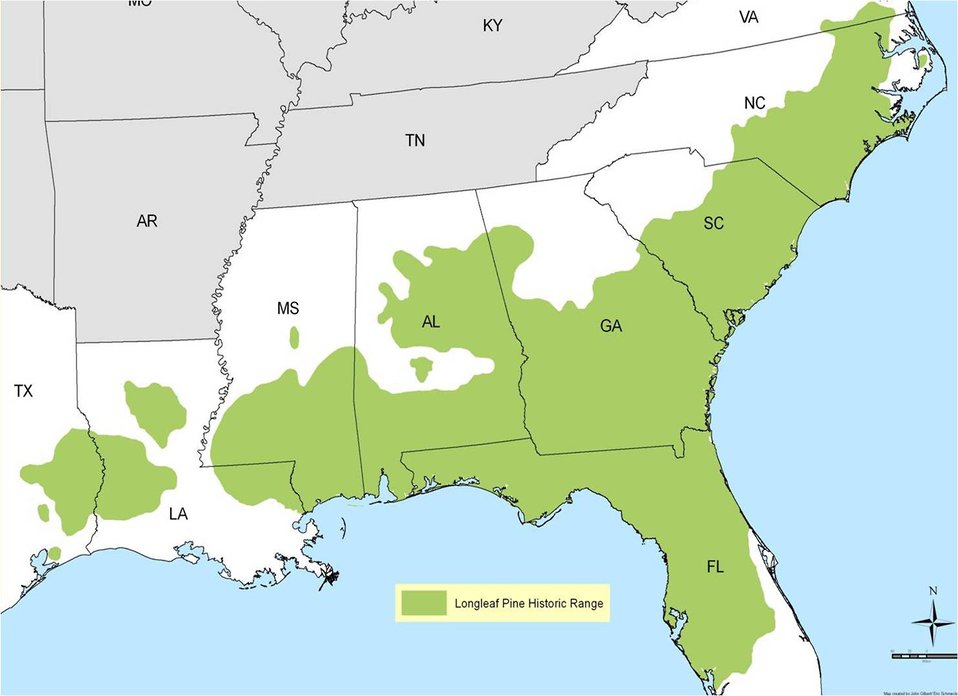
Longleaf pine's historic range

Green represents the historic range of the longleaf pine forest. It once covered more than 90 million acres from southern Virginia to Florida, and west to Texas. Because the longleaf pine evolved across this varied landscape, experts say it is best suited of all the southern pines to handle warmer temperatures, longer droughts, more intense storms and other likely climate-related stressors. Less than 4 percent remains.